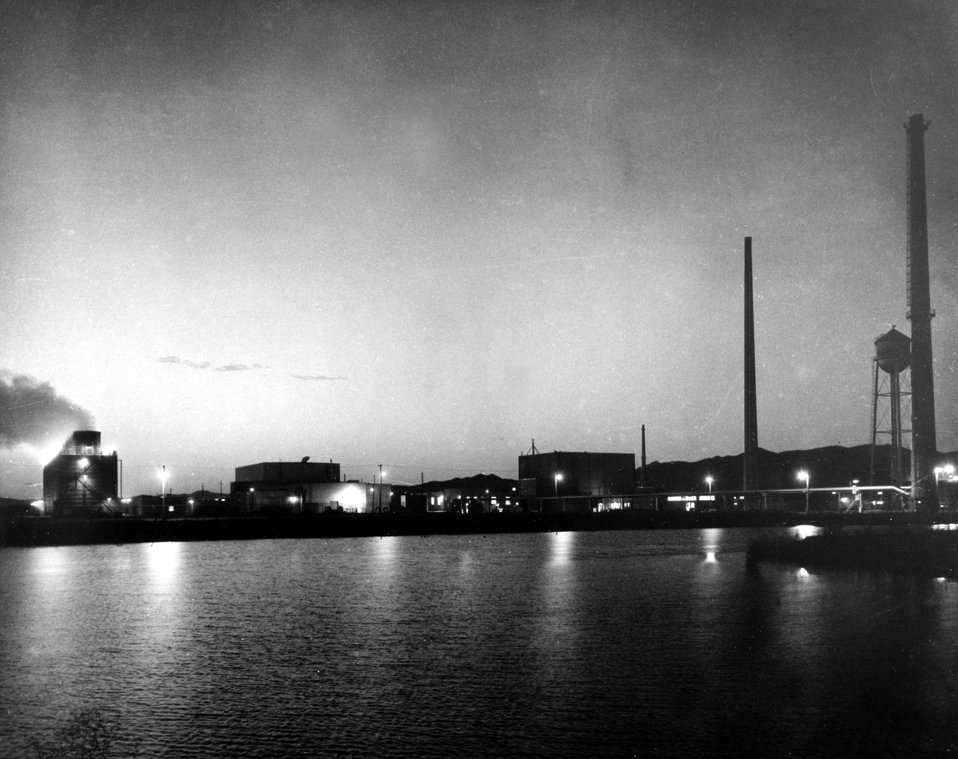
Lights of the Test Reactor Area at night reflected in a holding pool for low-level radioactive wastes at the U.S. Atomic Energy Commission's National Reactor Testing Station in Idaho. Circa 1974.